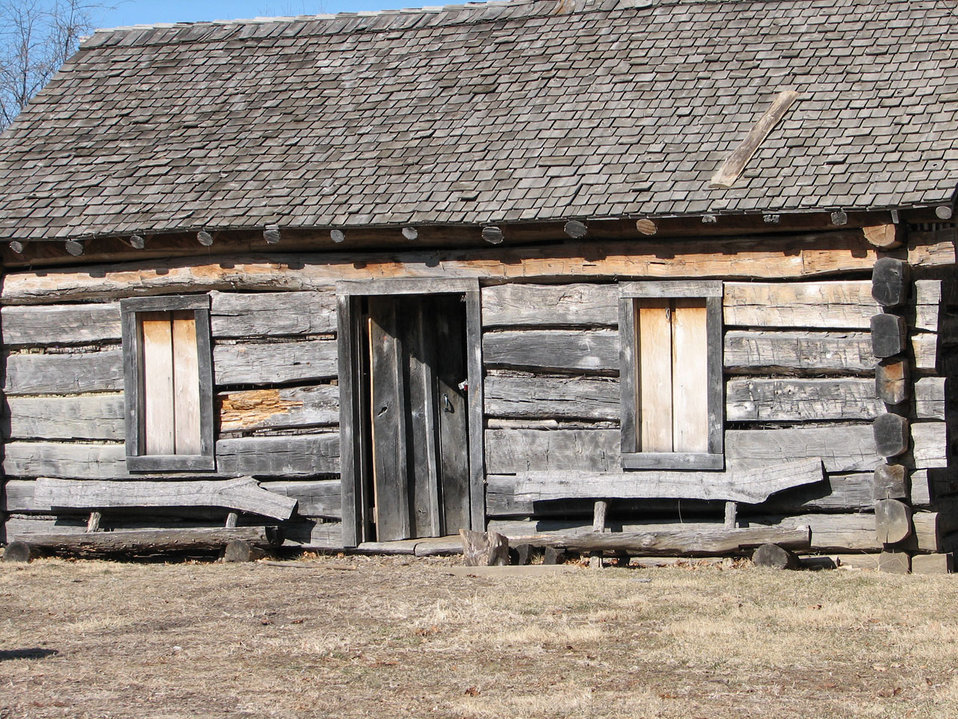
Old farmstead

Another boarded up home in ruins.